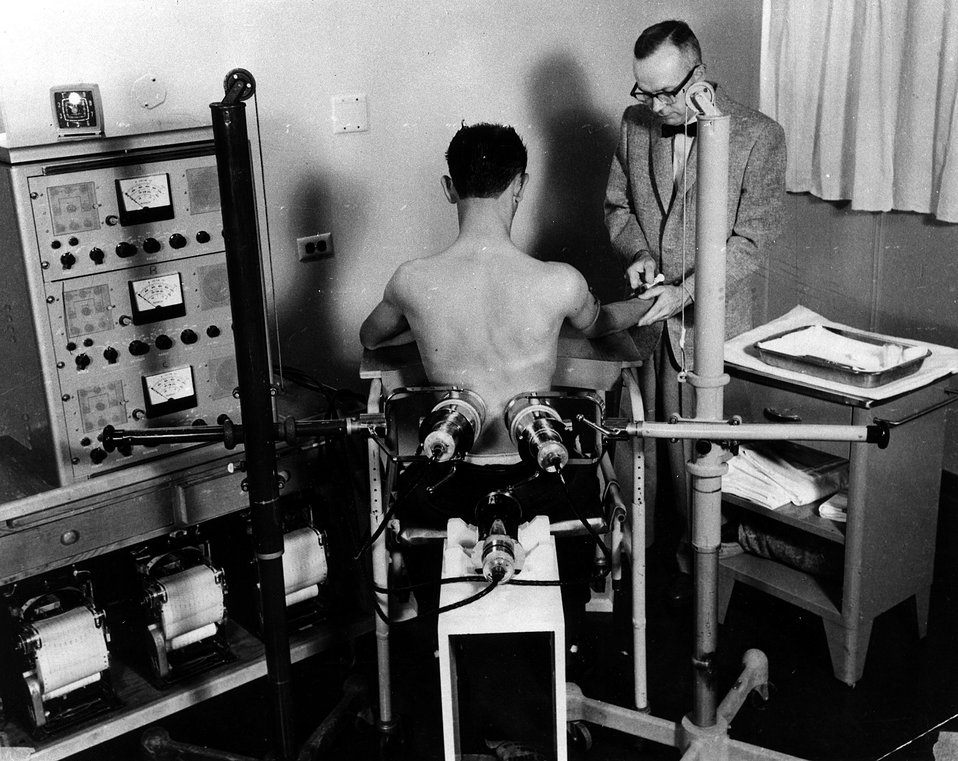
A patient seated in a specially designed chair with the three scintillation detectors in proper position for obtaining the iodine-131-labeled HIPPURAN renocystogram. c. 1964